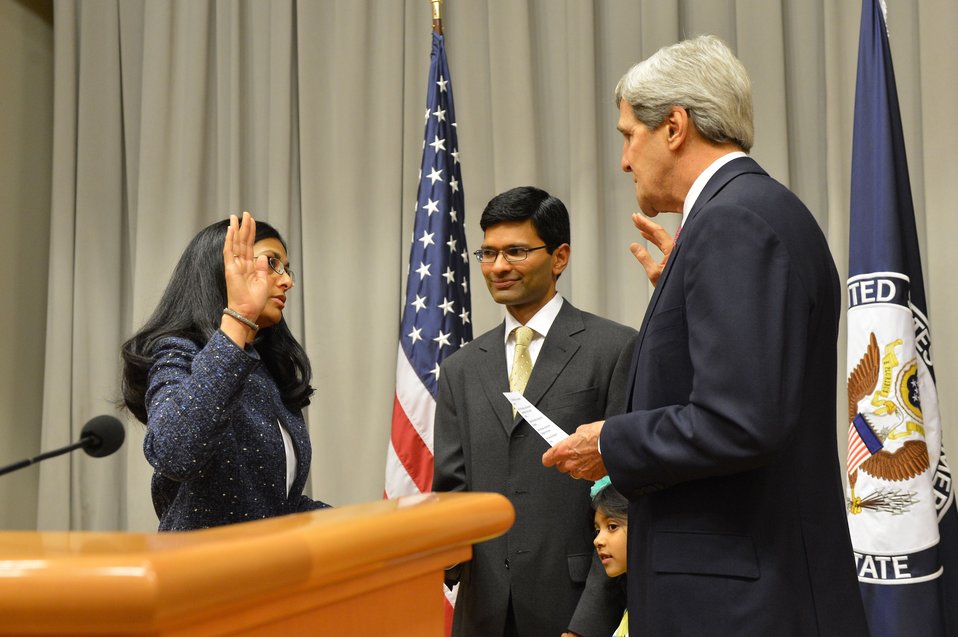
Secretary Kerry Swears in Assistant Secretary Biswal

U.S. Secretary of State John Kerry swears in Nisha Desai Biswal as the next Assistant Secretary of State for South and Central Asian Affairs at the U.S. Department of State in Washington, D.C., on November 21, 2013.